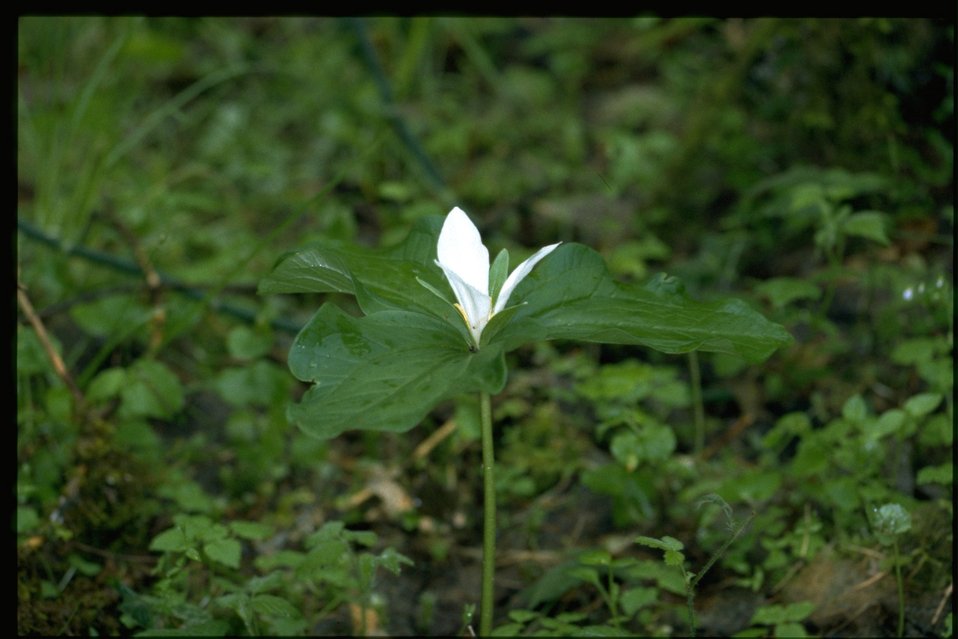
Medium shot of Trillium ovatum.